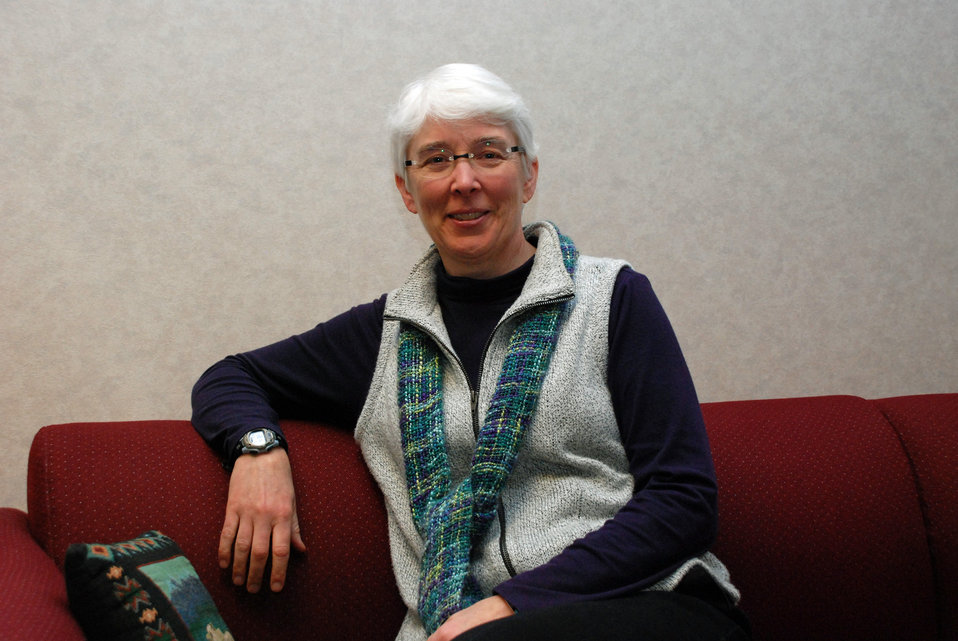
Lisa Williams

Dr. Lisa Williams, winner of the U.S. Fish and Wildlife Service's 2013 Science Leadership Award, is the Branch Chief of Environmental Contaminants at the East Lansing Ecological Services Field Office in Michigan.